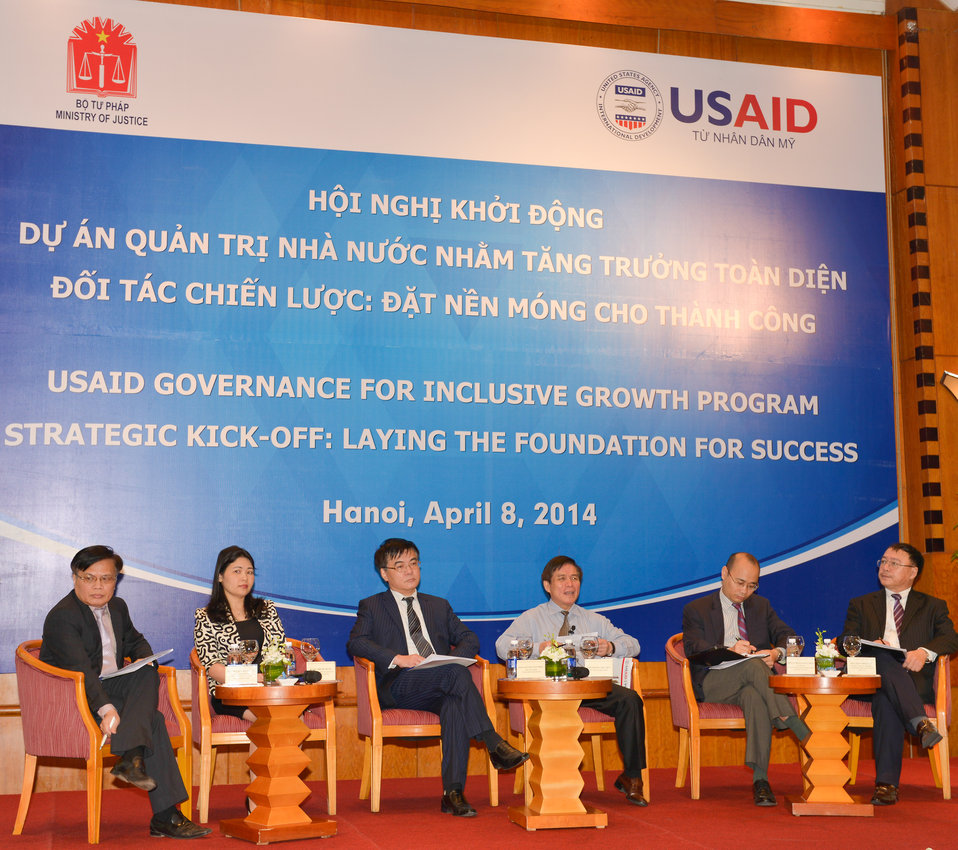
Strategic Kick-off of Governance for Inclusive Growth Program

Hanoi, April 8, 2014.